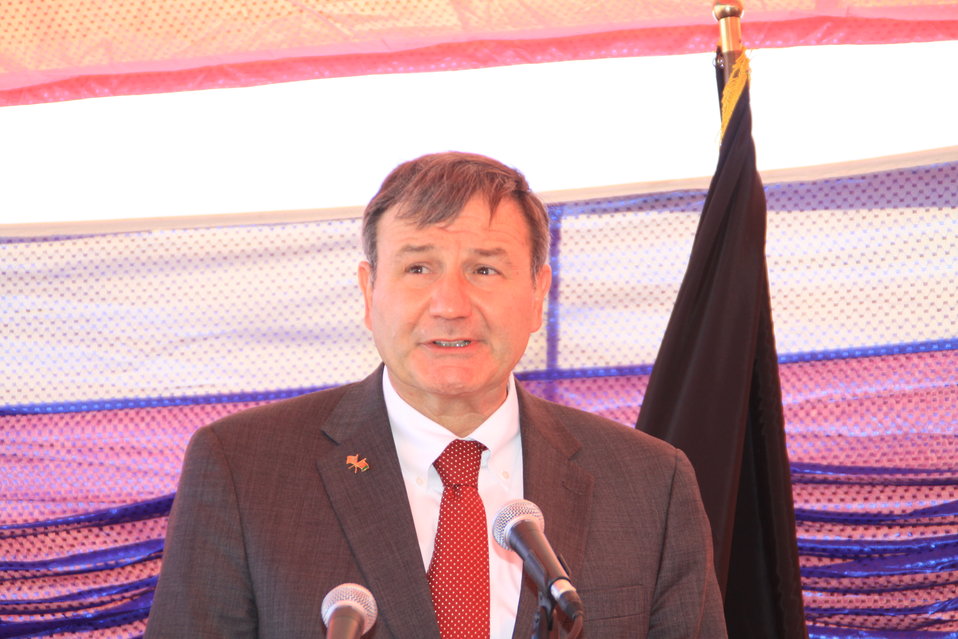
AVIPA Plus Wheat Seed Distribution 101005

US Ambassador Karl Eikenberry and USAID Acting Mission Director Kevin Brownawell joined the Minister of Agriculture, Irrigation and Livestock, H.E. Minister Mohammed Rahimi in signing a Memorandum of Understanding and distributing vouchers to area farmers for wheat and fertilizer.

US Ambassador Karl Eikenberry and USAID Acting Mission Director Kevin Brownawell joined the Minister of Agriculture, Irrigation and Livestock, H.E. Minister Mohammed Rahimi in signing a Memorandum of Understanding and distributing vouchers to area farmers for wheat and fertilizer.